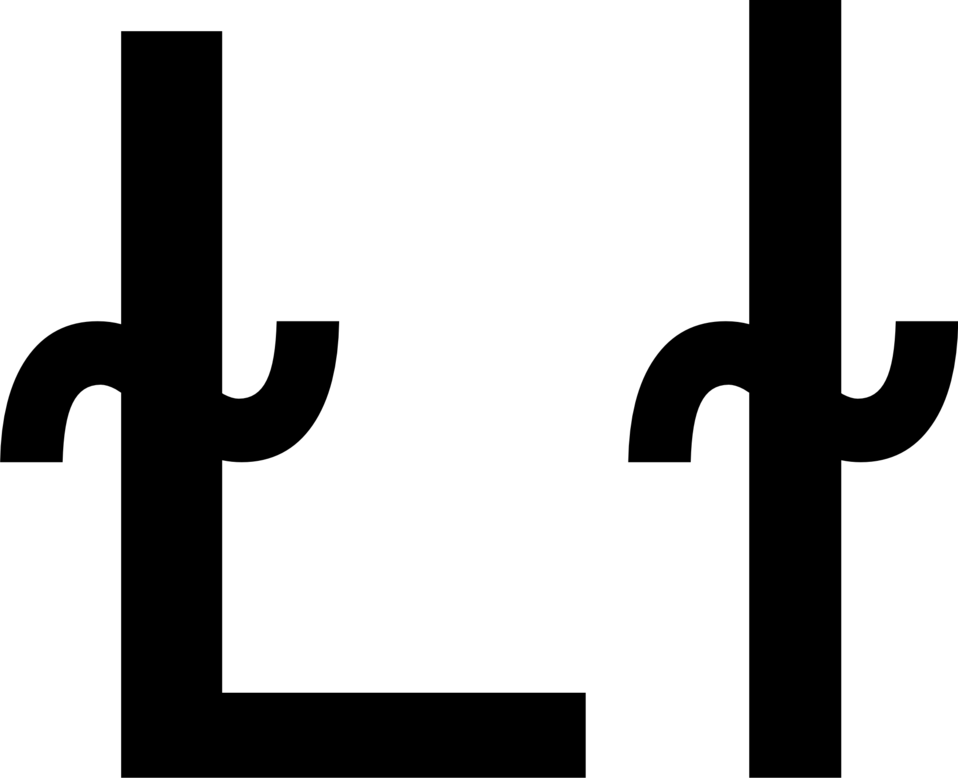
Latin letter L with middle tilde (Ɫ/ɫ)